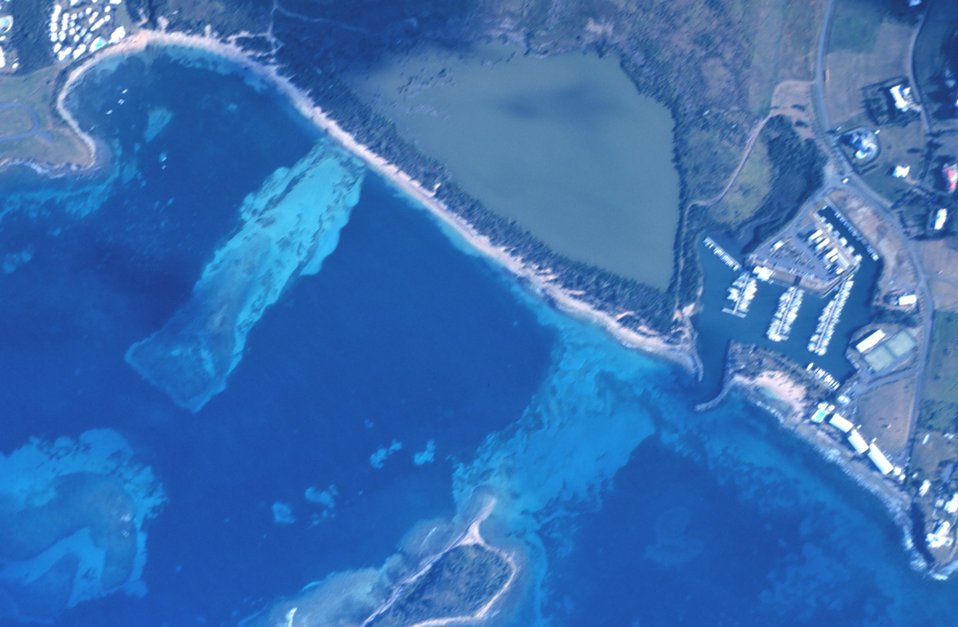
Green Cay and Chenay Bay.